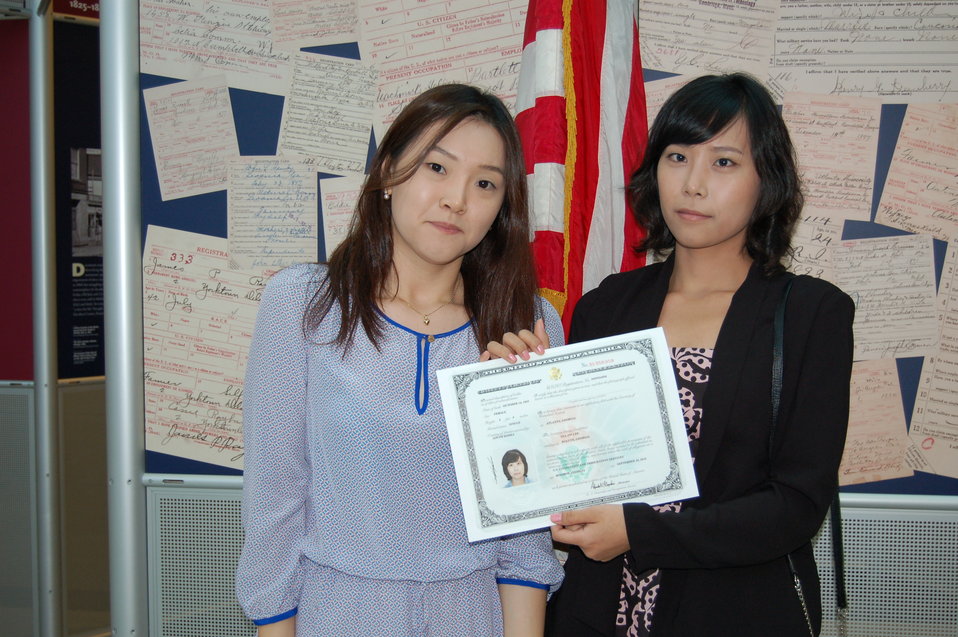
New Citizens